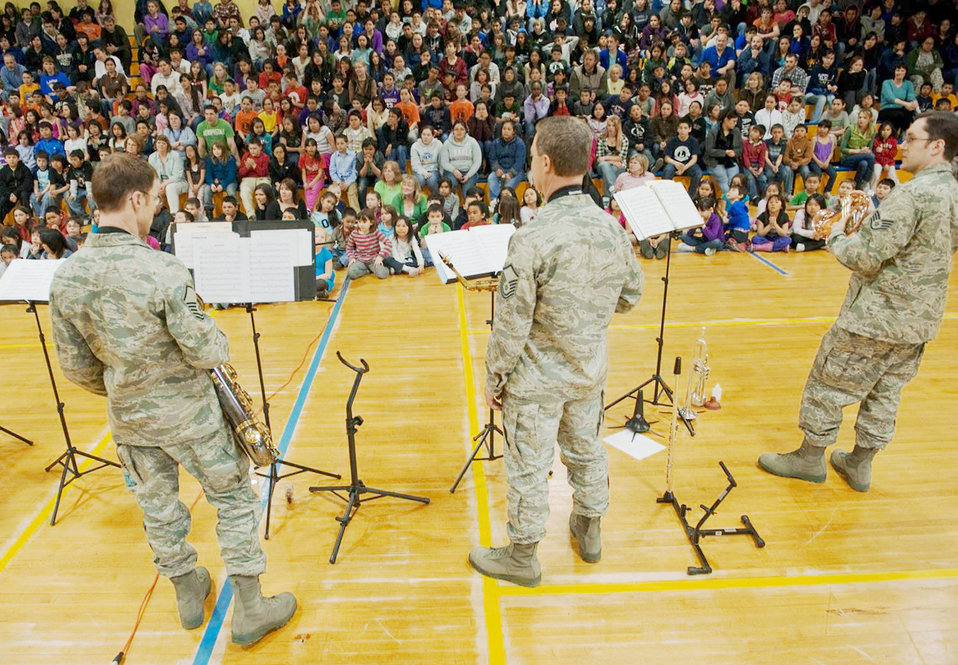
Northern Lights entertain native Alaskans during Operation Artic Care

Members of the Pacific Air Forces Northern Lights brass ensemble introduce themselves to elementary and high school students April 20, 2010, in Kotzebue, Alaska.